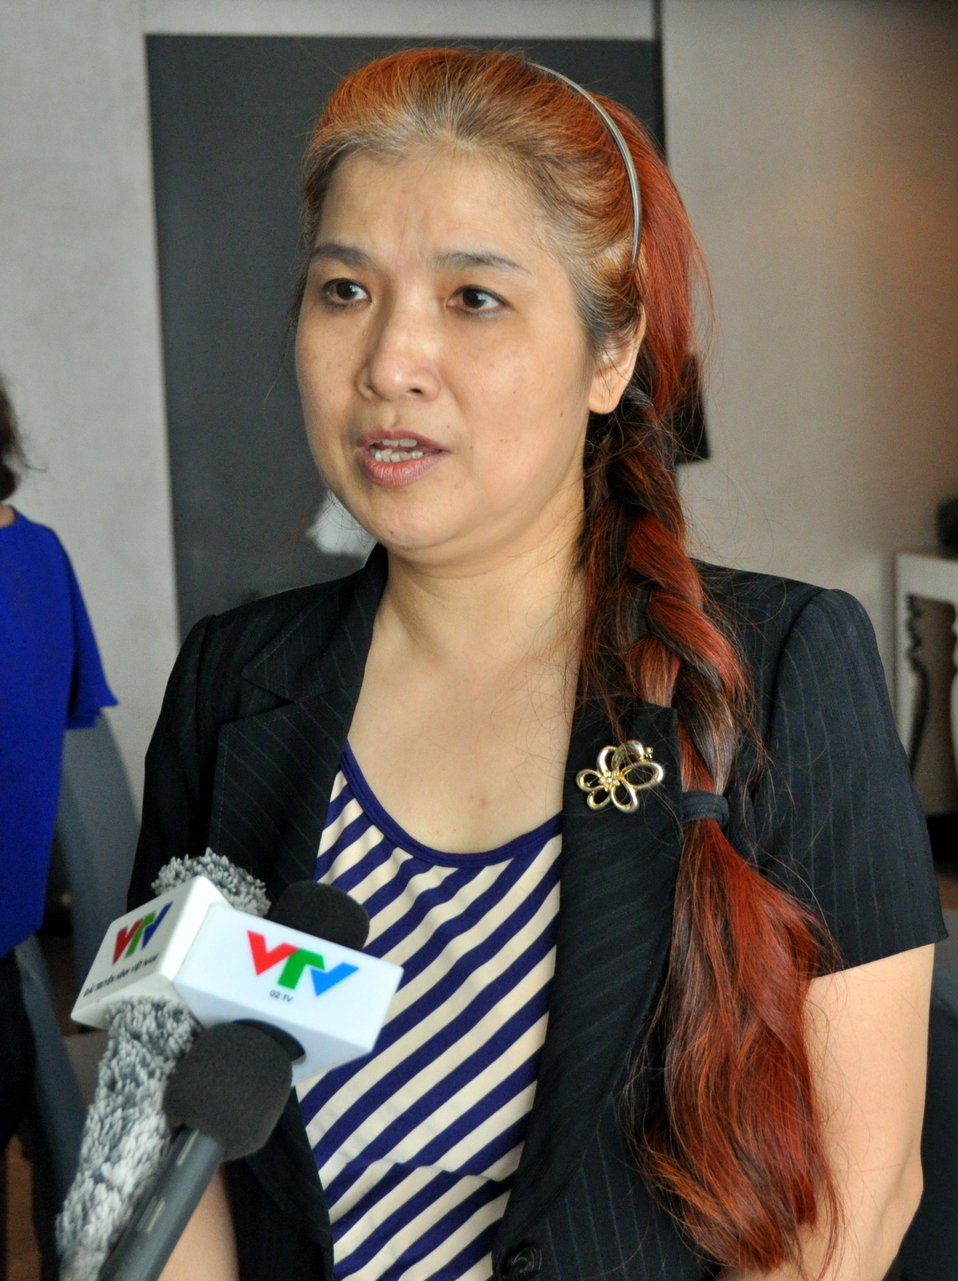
Mrs. Pham Hoai Giang of USAID HIV Workplace Project anwers intervew questions from VTV4 and O2TV.

Hanoi, June 20, 2013.